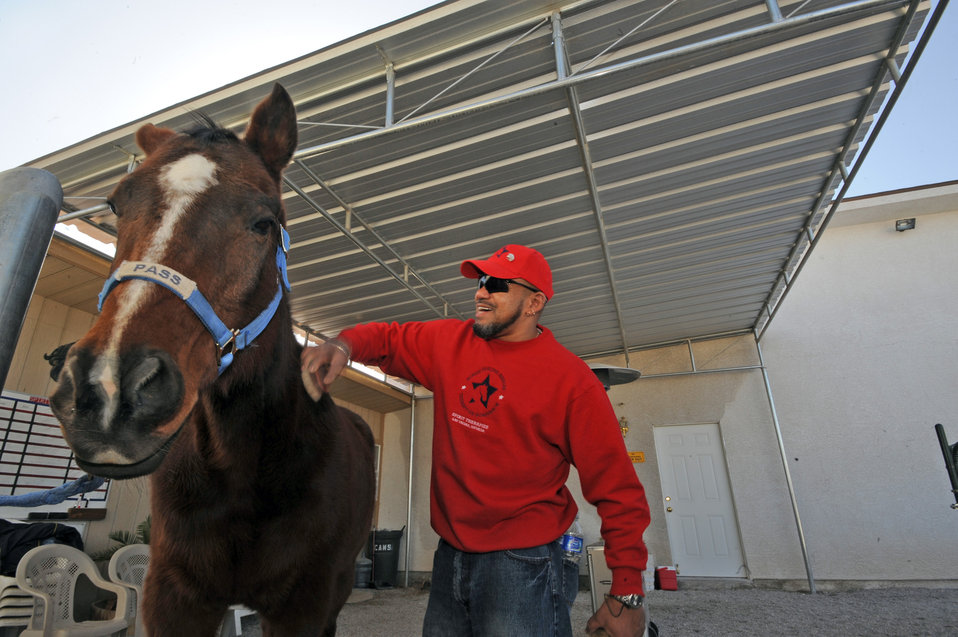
Horses Healing Heroes

Kim Tanner, a retired Army transportation specialist, brushes